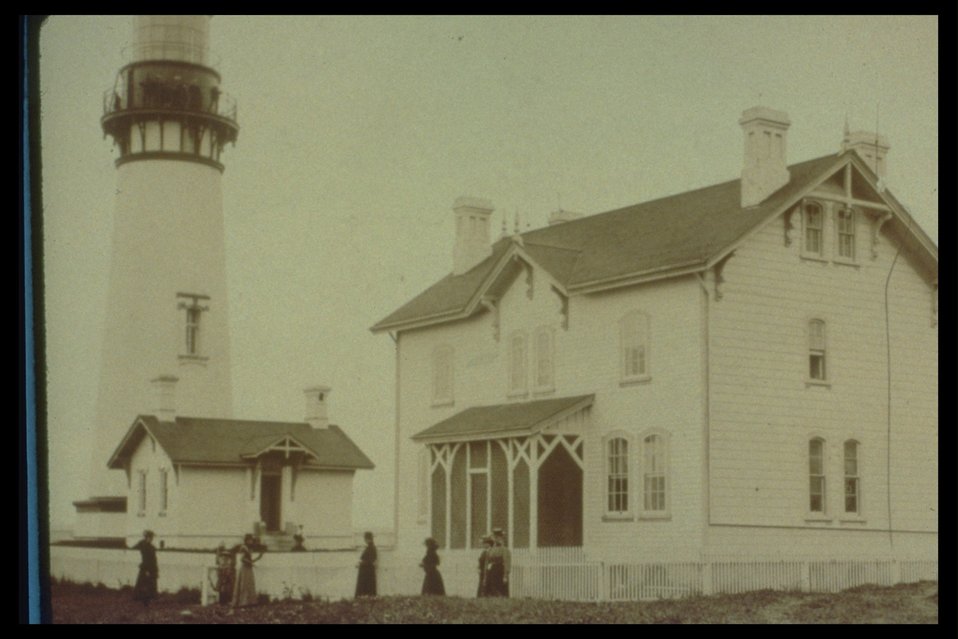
Early Yaquina Head Lighthouse with women standing at the keeper's house.